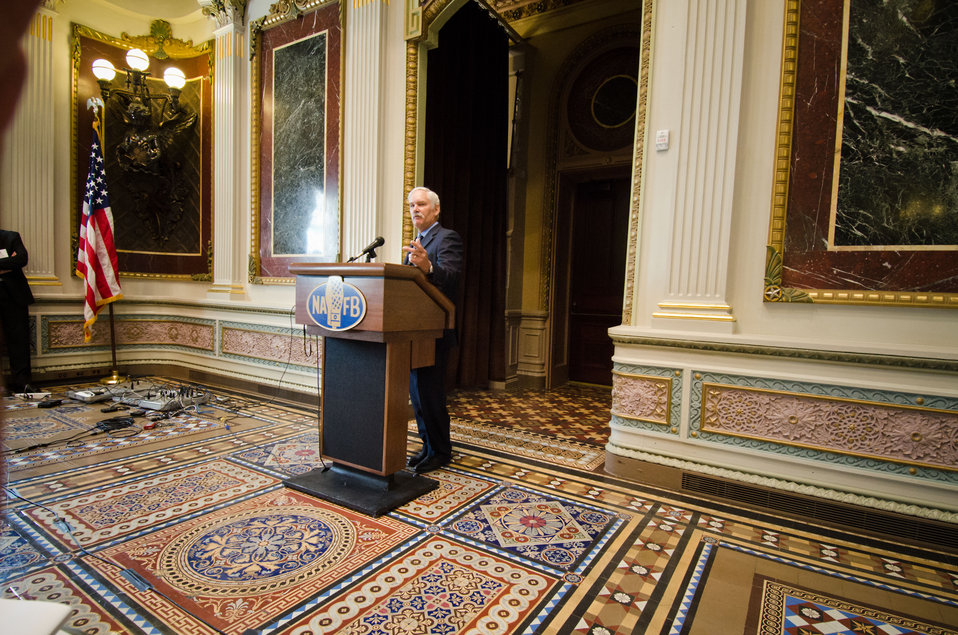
Farm and Foreign Agriculture Services Acting Under Secretary Michael Scuse spoke about American production agriculture at the spring National Association of Farm Broadcasters (NAFB), “Washington Watch” member retreat in Washington, D.C. This year the meeting was held in the Eisenhower Executive Office Building, Indian Treaty Room Tuesday, April 24, 2012 featuring United Sates Department of Agriculture and Obama Administration officials. This opportunity provides an occasion to highlight efforts to rebuild and revitalize rural America, including efforts for the agricultural community. NAFB is the recognized and trusted source of agricultural and rural lifestyle information for America with approximately 200 members who broadcast via radio in nearly every state in the country.